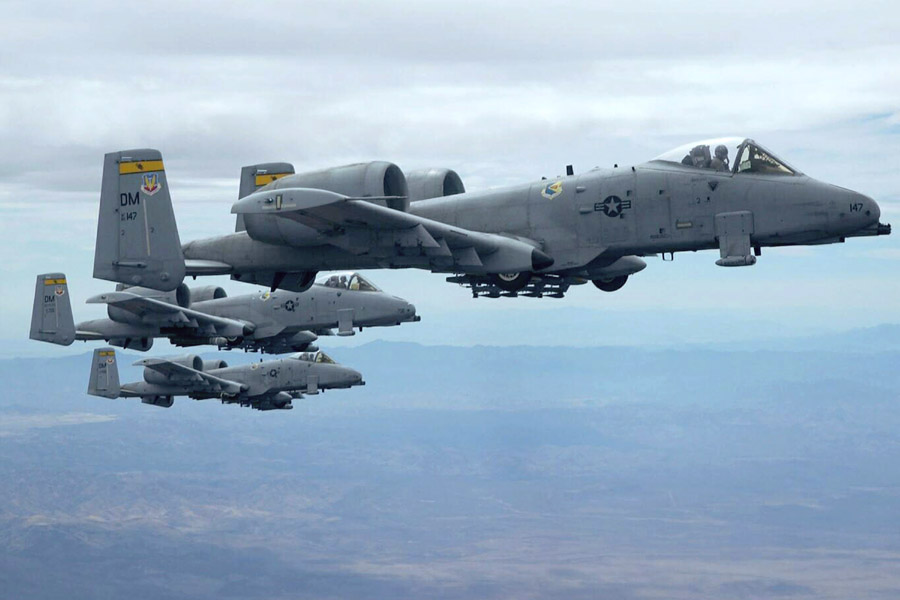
Jan. 27 airpower summary: A-10 Thunderbolt IIs provide show of force

Three A-10 Thunderbolt IIs fly in formation. A-10s provided close-air-support near Balad, Iraq.